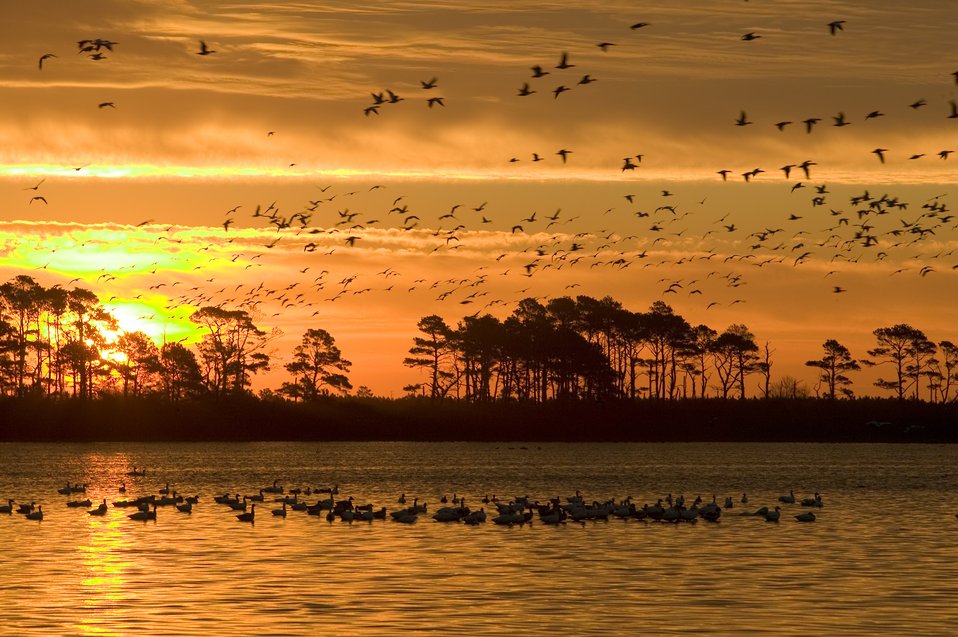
Photo of the Week - Sunrise at Chincoteague National Wildlife Refuge (VA)

Photo of the Week - 2/11/10

Sunrise over a salt marsh at Chincoteague National Wildlife Refuge in Virginia.